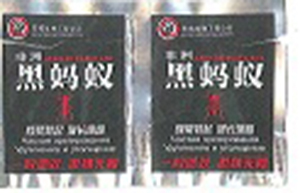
20140501163152678pic1 Page 3